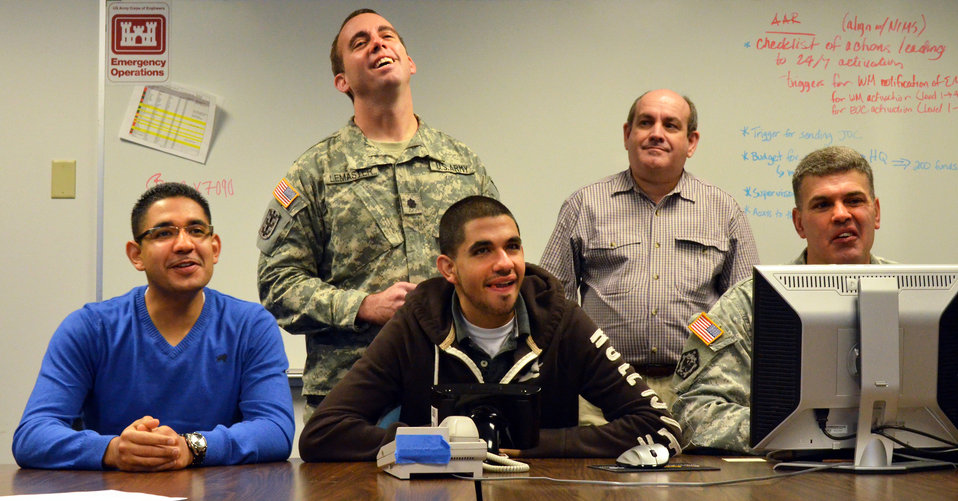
Holiday wishes from dad in Afghanistan

Members of the Mizani family and co-workers from the U.S. Army Corps of Engineers Sacramento District exchange holiday wishes via teleconference Dec. 20, 2012 with Corps employee Mehdi Mizani currently deployed to Afghanistan. By the time he returns, Mizani will have helped direct Corps construction programs for two full years in Afghanistan. The video linkup was sponsored by the Sacramento District’s family support network.